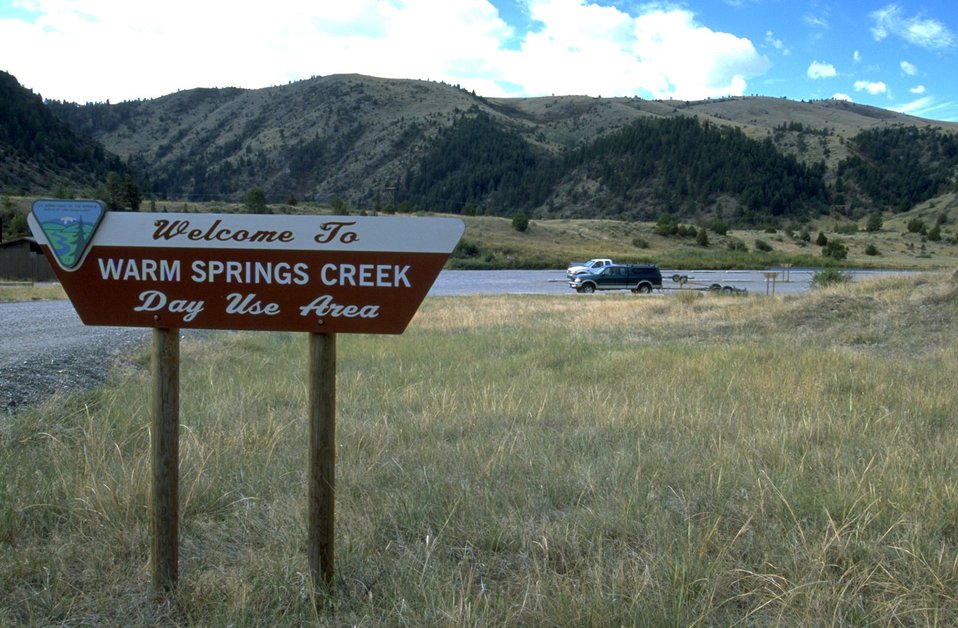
Sign at Warm Springs Creek Day Use Area